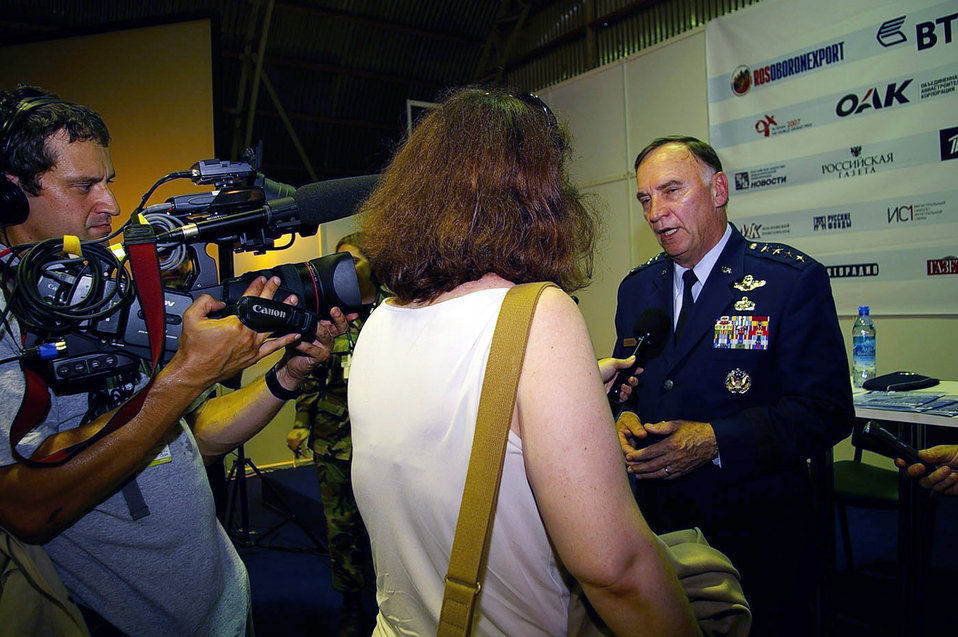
Airmen participate in Moscow International Air Show

Gen. William T. Hobbins gives an interview to Ellen Pinchuk from Bloomberg News during the opening day of the Moscow International Air Show Aug. 21 at Ramenskoye Airfield in Zhukovsky, Russia. The air show runs through Aug. 26 and includes Department of Defense participation of static displays and aerial flight demonstrations. The air show is one of the premier events of its type in the world. General Hobbins is commander of U.S. Air Forces in Europe. About 65 Airmen from bases worldwide are participating in this year's air show.